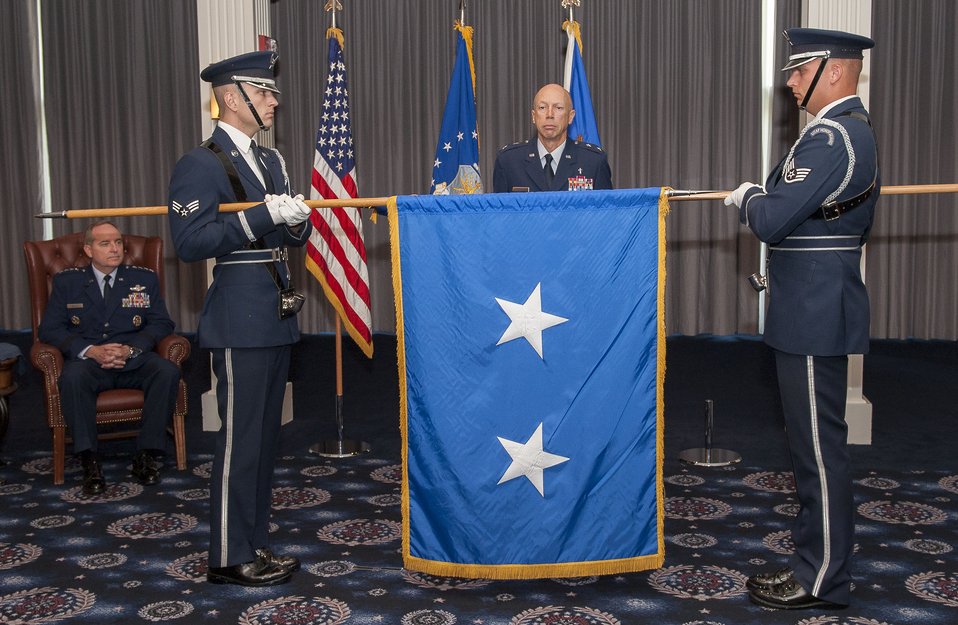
chaplain promo

Chief of Chaplains Maj. Gen. Howard Stendahl stands at attention during his promotion ceremony at Joint Base Anacostia-Bolling on Aug. 31,
2012.